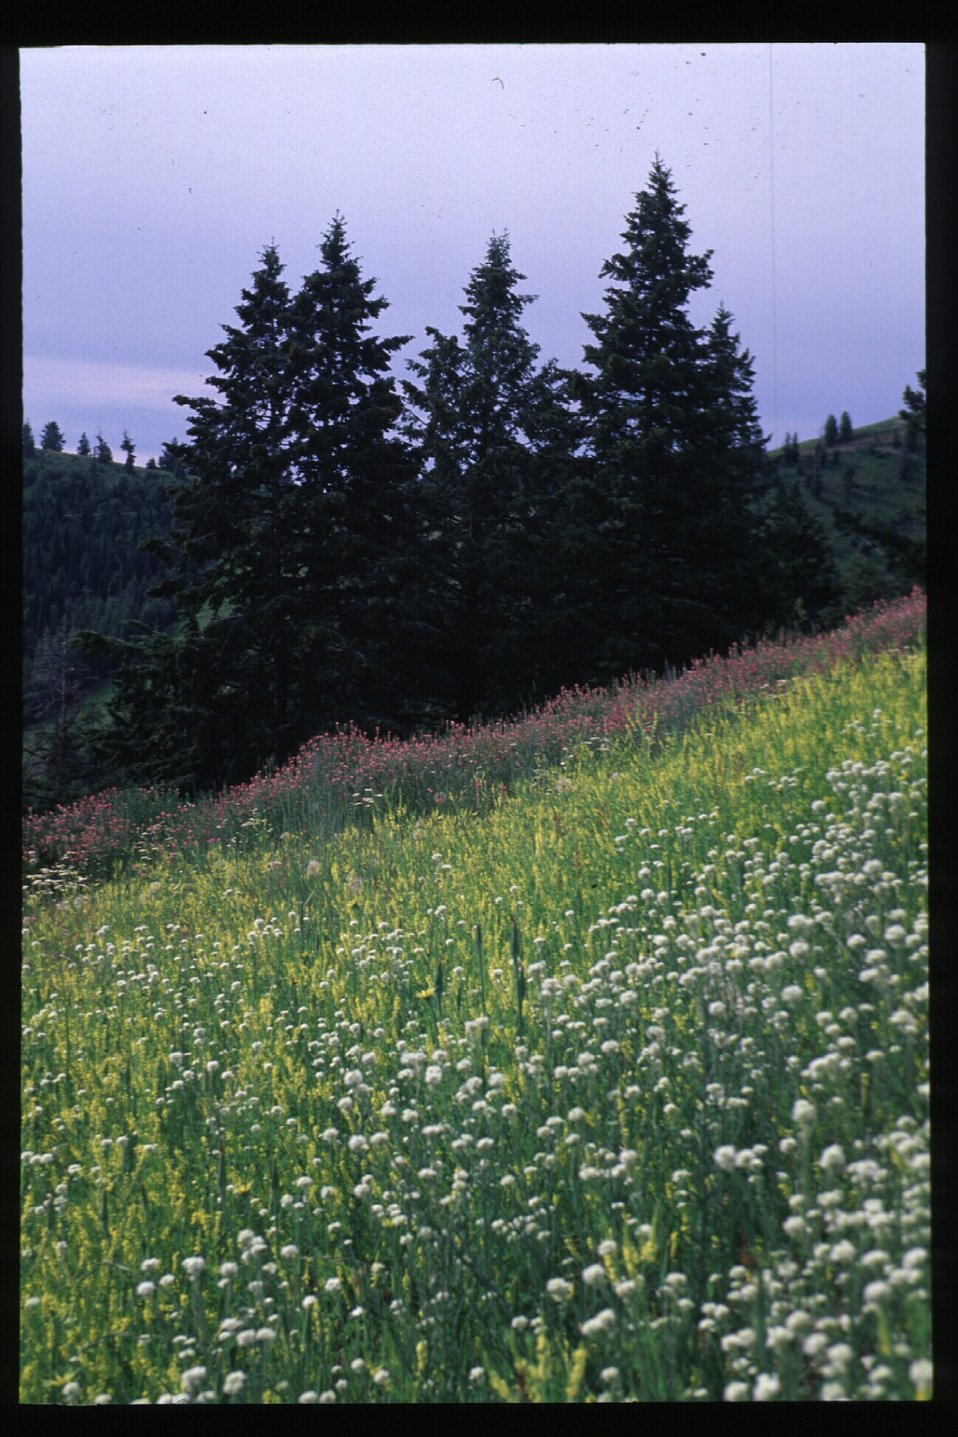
Recreation Scenic Biker Shoshone Field Office USRD Upper Snake River District Bald Mountain Trail Wildflowers